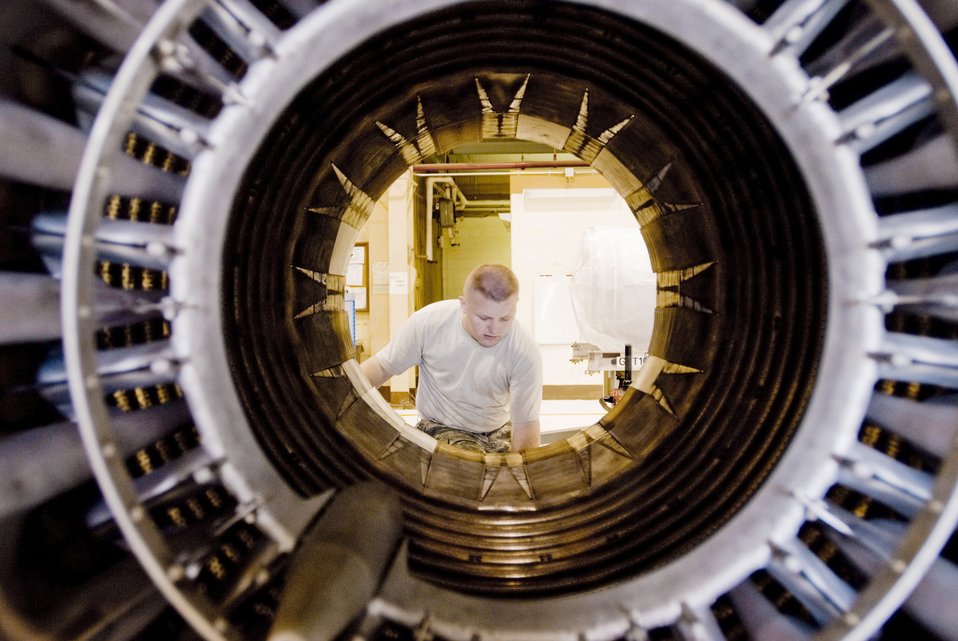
Checking out a ring of power

Senior Airman Chace Eck checks out an F-16 Fighting Falcon engine Sept. 2, 2009, at Kunsan Air Base, South Korea. Airman Eck is an aerospace propulsion journeymen assigned to the , 8th Maintenance Squadron.